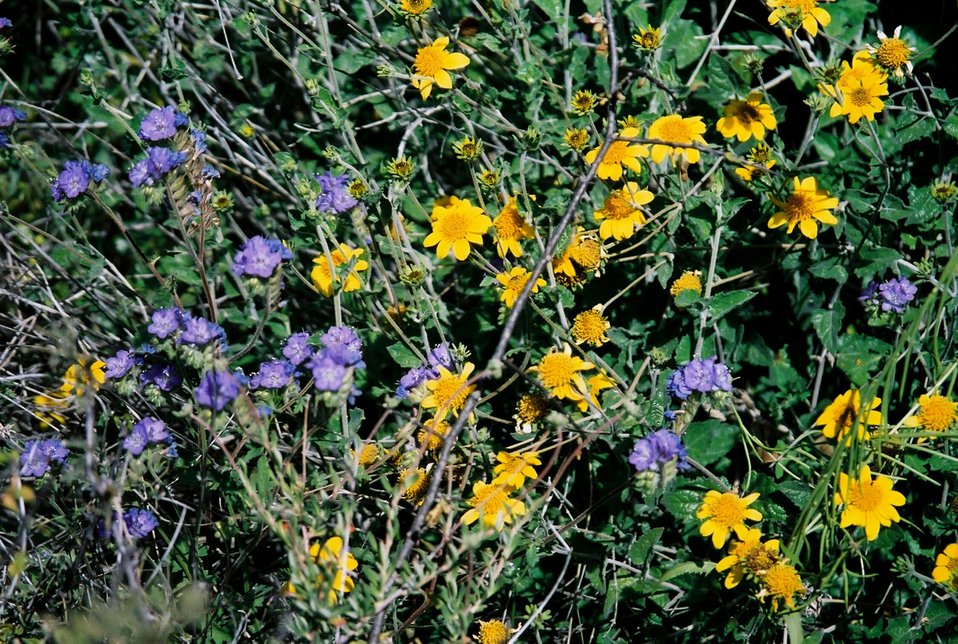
Many different kinds of beautiful wildflowers grow in the Agua Fria National Monument.